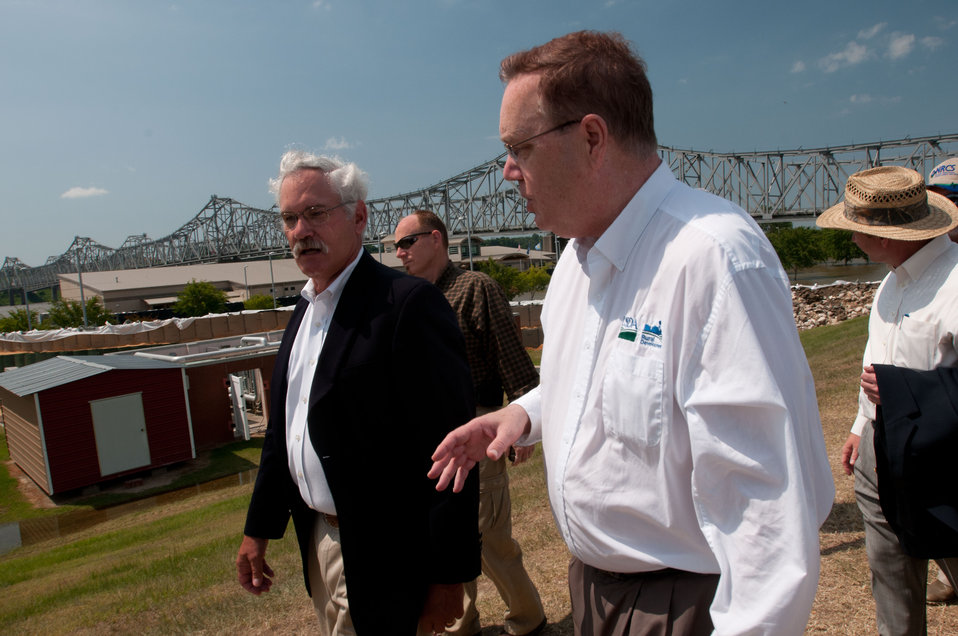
U.S. Department of Agriculture Undersecretary for Rural Development Dallas Tonsager (right) and Acting Under Secretary Farm and Foreign Agriculture Service Michael Scuse (left) discuss talking points on their way to meet farmers and news media on the Mississippi River levee at Vidalia, LA, on Thursday, May 19, 2011. In the background is the Natchez–Vidalia Bridge which connects Natchez, Mississippi and Vidalia.